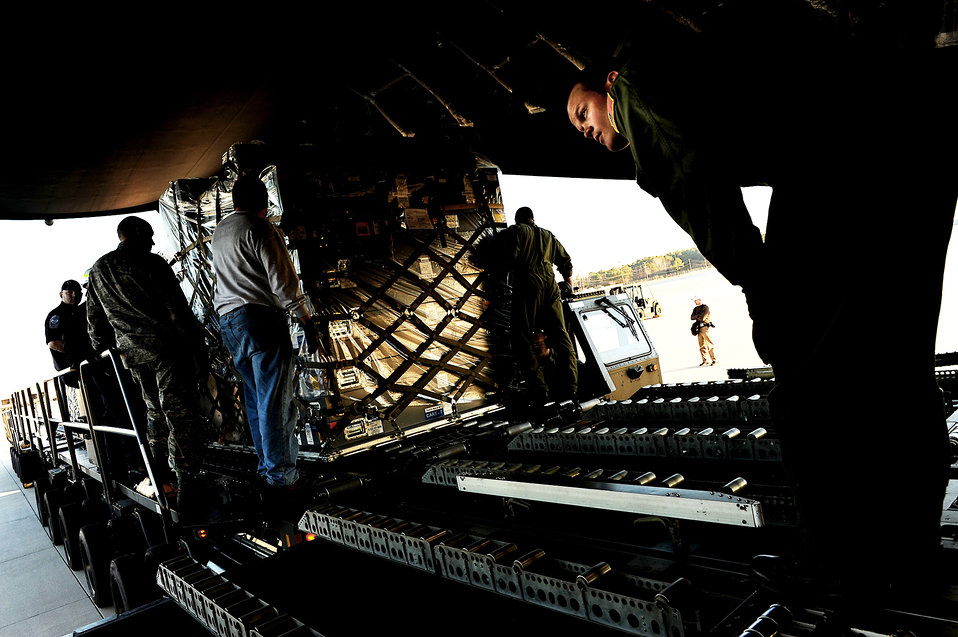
Haiti Earthquake Relief

A C-17 Globemaster III crew from the 21st Airlift Squadron at Travis Air Force Base, Calif., load their plane with Haiti earthquake relief supplies Jan. 15, 2010, at Norfolk, Va.